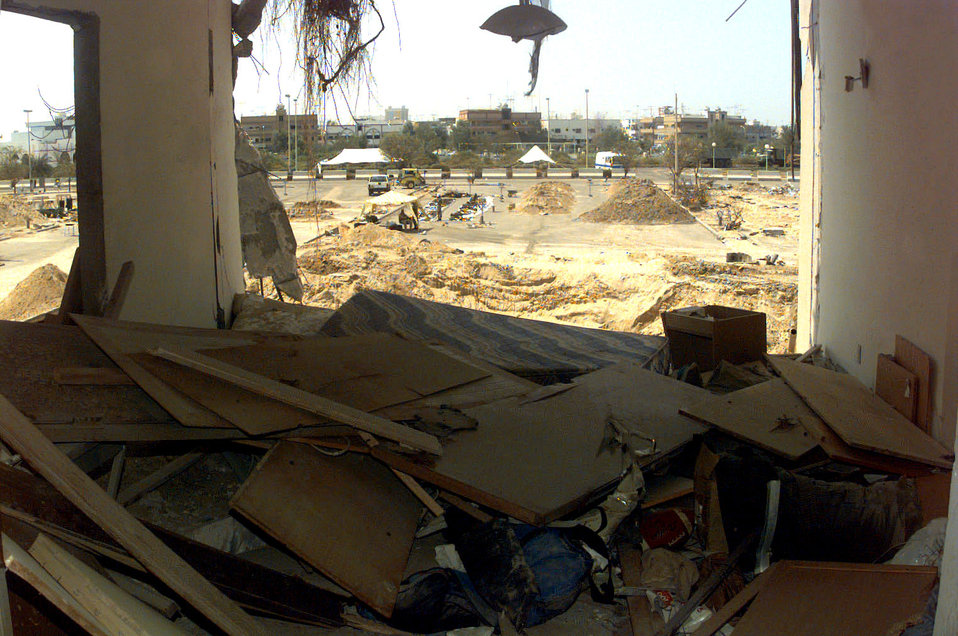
Airmen use lessons learned 10 years after Khobar Towers attack

Nineteen Airmen died and hundreds were injured in the terrorist attack at Khobar Towers in Dhahran, Saudi Arabia, on June 25, 1996. The front of Building 131 was blown off exposing rooms like this one when a fuel truck parked nearby was detonated by terrorists.